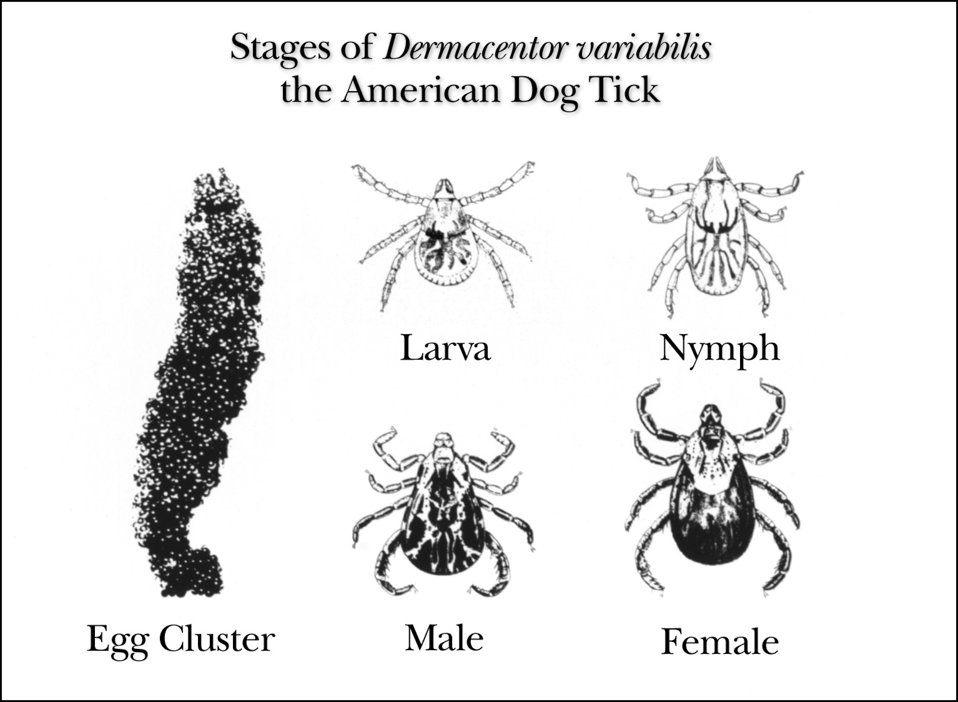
This illustration shows the growth stages of the 'American dog tick', Dermacentor variabilis, from eggs to adult insects.